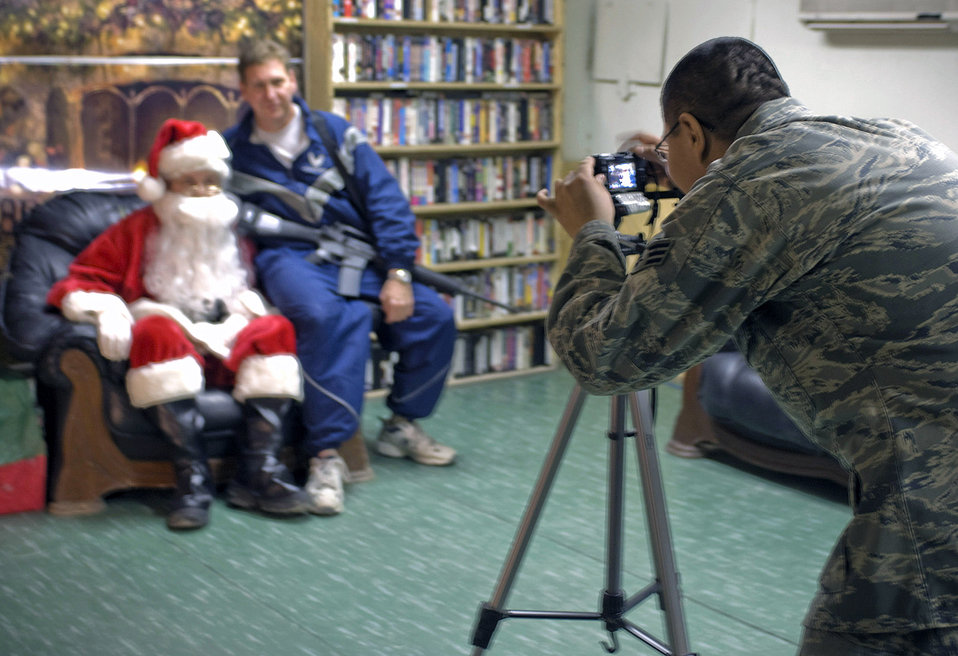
Airman helps troops connect with families during holidays

Senior Airman Marco Palacios takes an Airman's photo with Santa Claus Dec. 17 at Bagram Airfield, Afghanistan. Airman Palacios, from Reno, Nev., took nearly 300 pictures for Airmen and turned them into e-cards they could send to their family and friends. Airman Palacios is a services technician with the 455th Expeditionary Force Support Squadron.